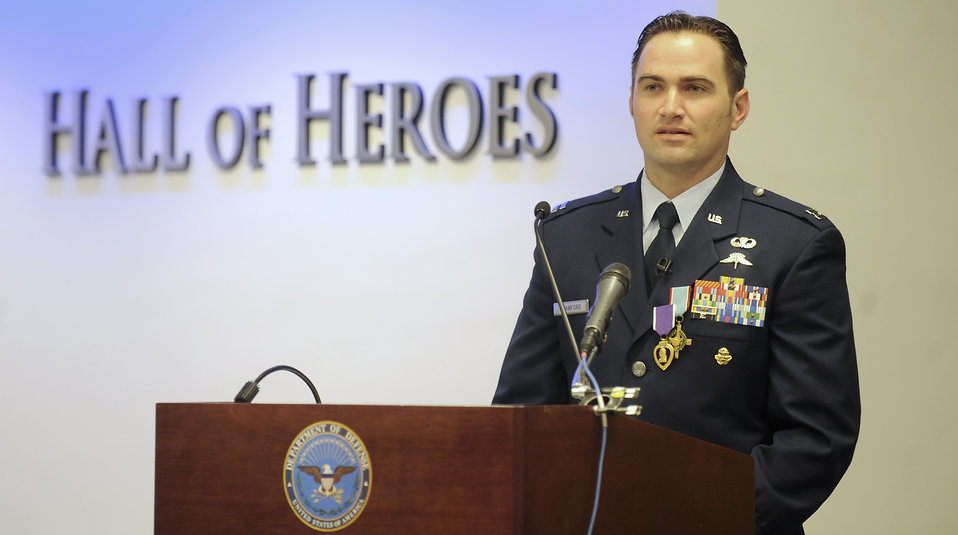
Air Force Cross ceremony

Capt. Barry Crawford speaks after Air Force Chief of Staff Gen. Norton Schwartz presented him with the Air Force Cross and Purple Heart during a ceremony in the Pentagon's Hall of Heroes in Washington, D.C., on April 12, 2012.